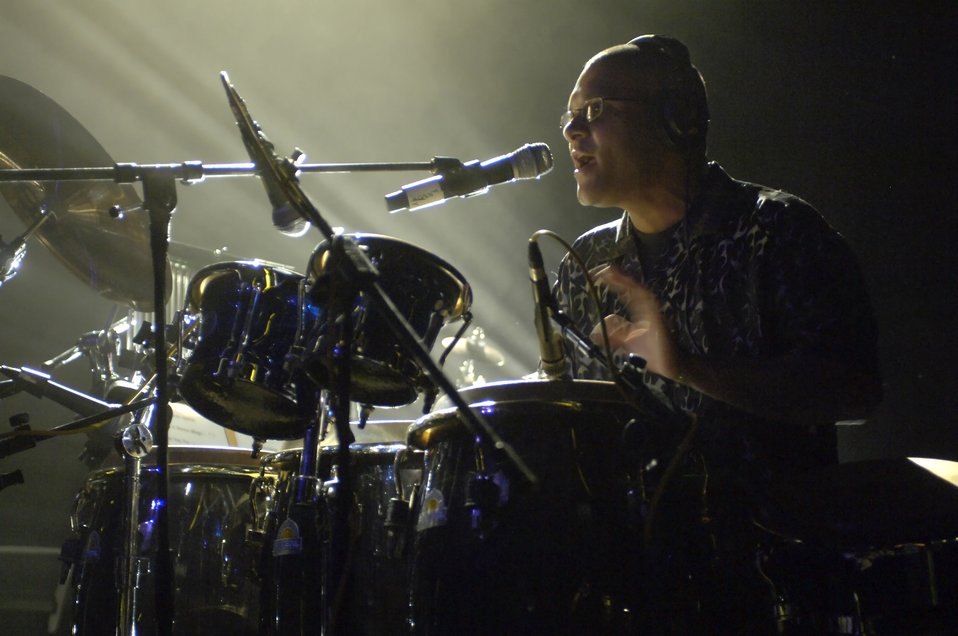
Sergeant takes Anti-drug battle personally

Airman 1st Class Wilfredo Cruz, percussionist and backup vocalist with Reserve Generation, plays for third through seventh grade students attending an anti-drug concert Oct. 25 at Trinity University in San Antonio. The concert was part of National Red Ribbon Week, an anti-drug campaign focused on educating individuals, families and communities on the destructive effects of drugs and the positive alternative life choices that are available to youth. The 2006 Red Ribbon Week runs from Oct. 23 to 29. Reserve Generation is part of the Air Force Reserve Command Band at Robins Air Force Base, Ga.